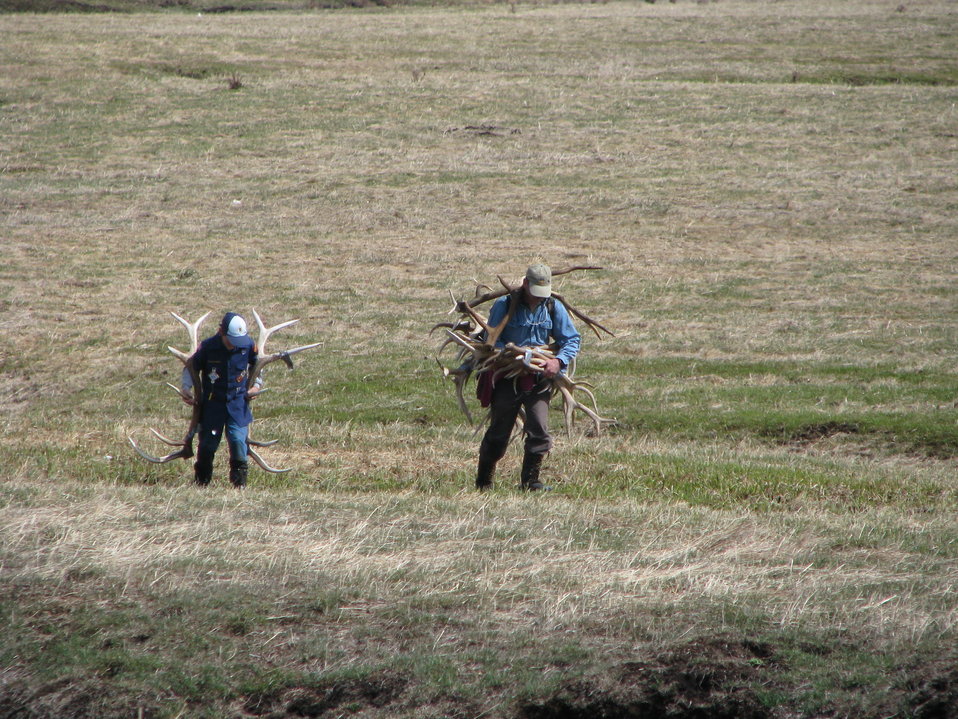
A Heavy Load

A successful Boy Scout and leader make their way back to the refuge shop area where all the antlers are returned. Refuge staff then transport the antlers in government vehicles to a secured location.